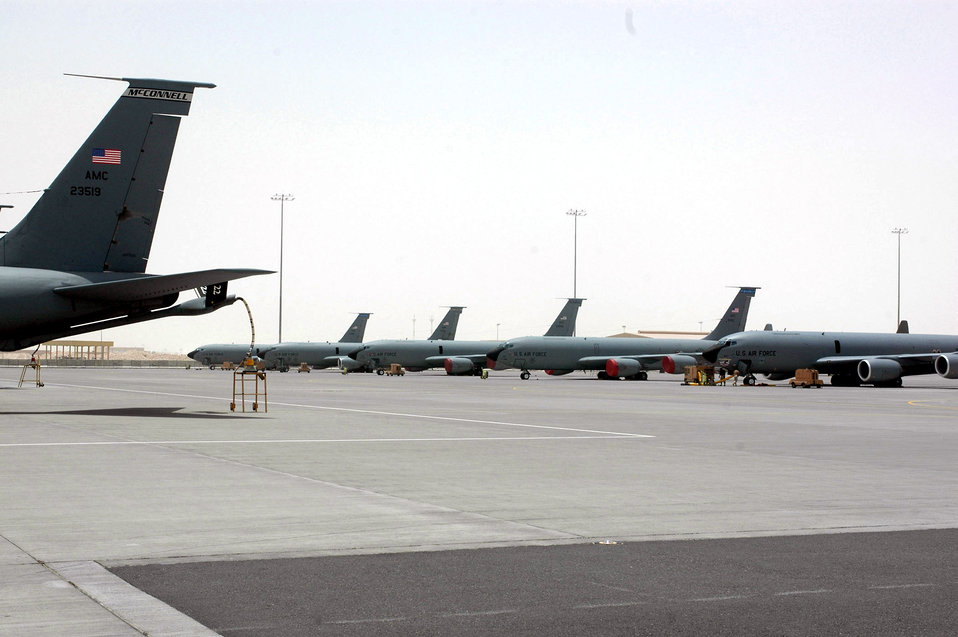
Airpower summary for June 27, 2007

KC-135 Stratotankers with the 379th Air Expeditionary Wing at a base in Southwest Asia await their next missions. These aerial refuelers greatly enhance the Air Force's global reach and global power. They also provide refueling support to Navy and Marine aircraft and aircraft of allied nations. The KC-135 is capable of transporting litter and ambulatory patients during aeromedical evacuations by using patient-support pallets.